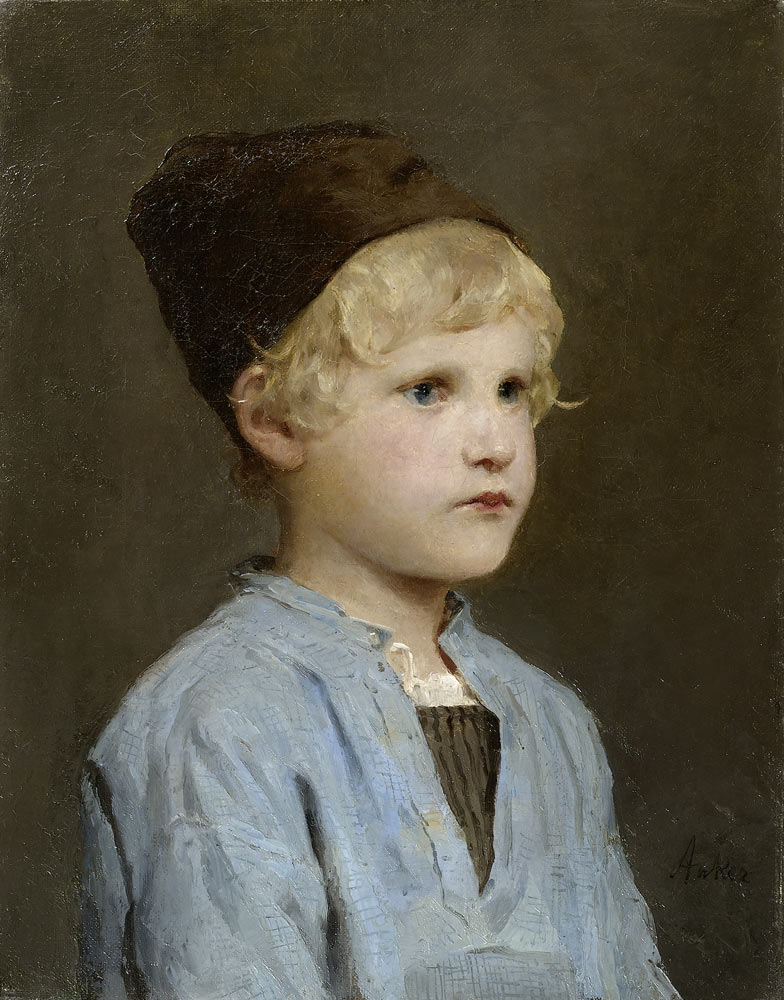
Albert Anker - Porträt eines Knaben mit Mütze